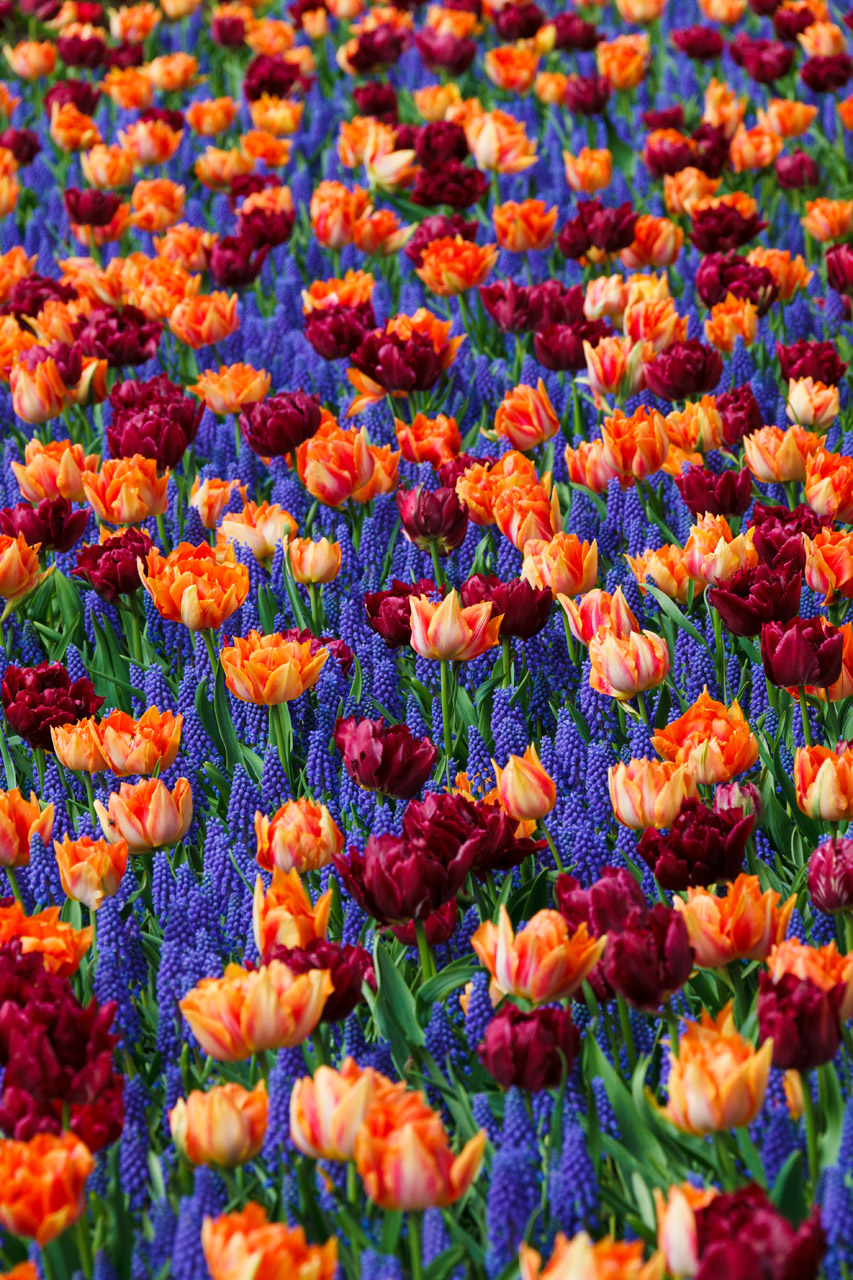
Tulips and grape hyacinths

Beautiful colorful flower background in keukenhof gardens in holland.